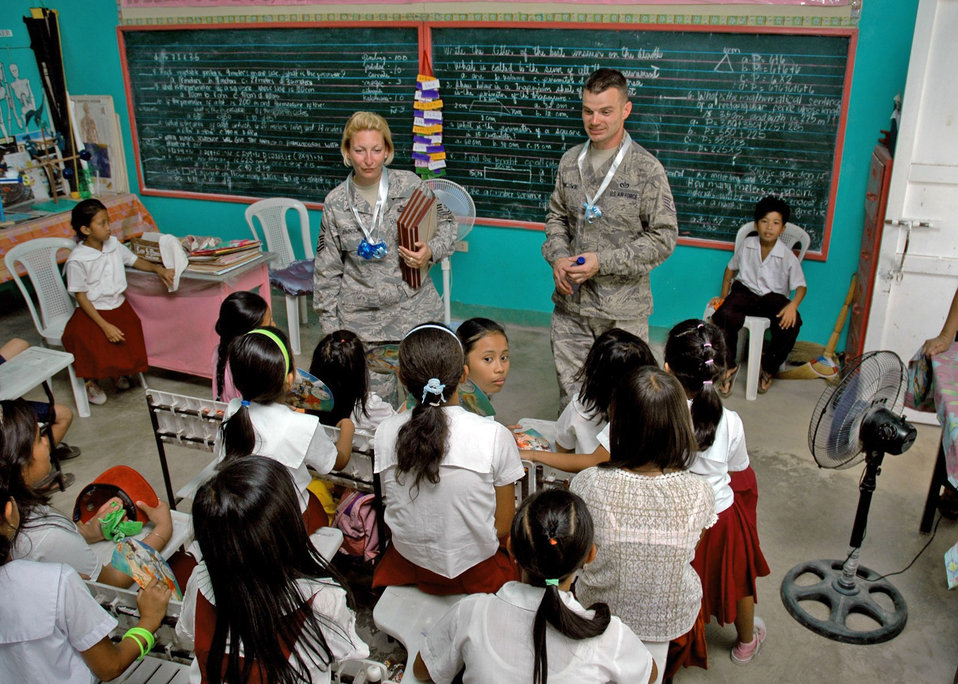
U.S., Philippine servicembers visit school children

Senior Master Sgt. Nicole Johnson and Staff Sgt. Anthony Lenczowski visit a third-grade classroom March 15, 2010, at Sapang Bato Elementary School in Angeles City, Philippines. Sergeant Johnson is deployed from 13th Air Force at Joint Base Pearl Harbor-Hickam, Hawaii, and Sergeant Lenczowski is from the 25th Air Support Operations Squadron at Wheeler Army Air Field, Hawaii.